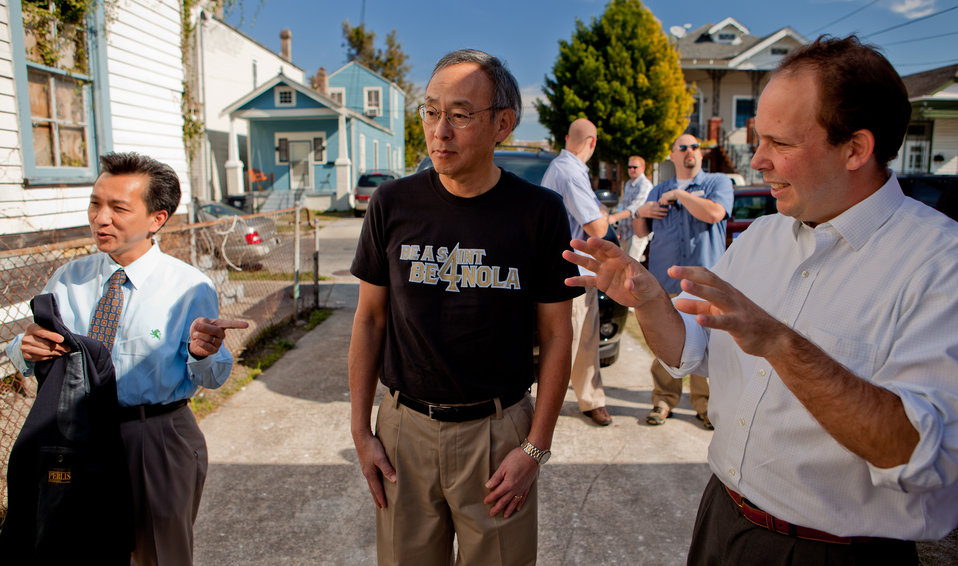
Veteran's Day in New Orleans 3 of 10

Louisiana Congressman Joseph Cao and Zachary Rosenburg, CEO for The Saint Bernard Project, greet Sec. Chu at a home in the early stages of the reconstruction process.